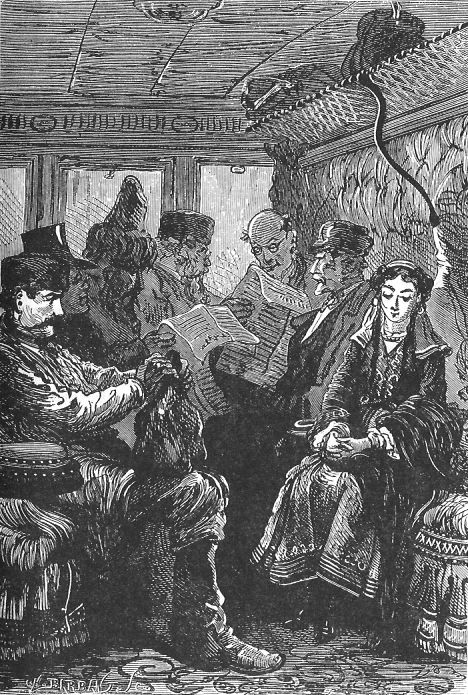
An illustration from the novel 'Michael Strogoff: The Courier of the Czar' by Jules Verne drawn by Jules Férat. Polski: Ilustracja powieści Juliusza Verne'a 'Michał Strogow, kurier carski' autorstwa Julesa Férata. Français : 'Michel Strogoff. Le courier du tzar', Jules Férat. Français : Puis les yeux baissés, elle se disposa…